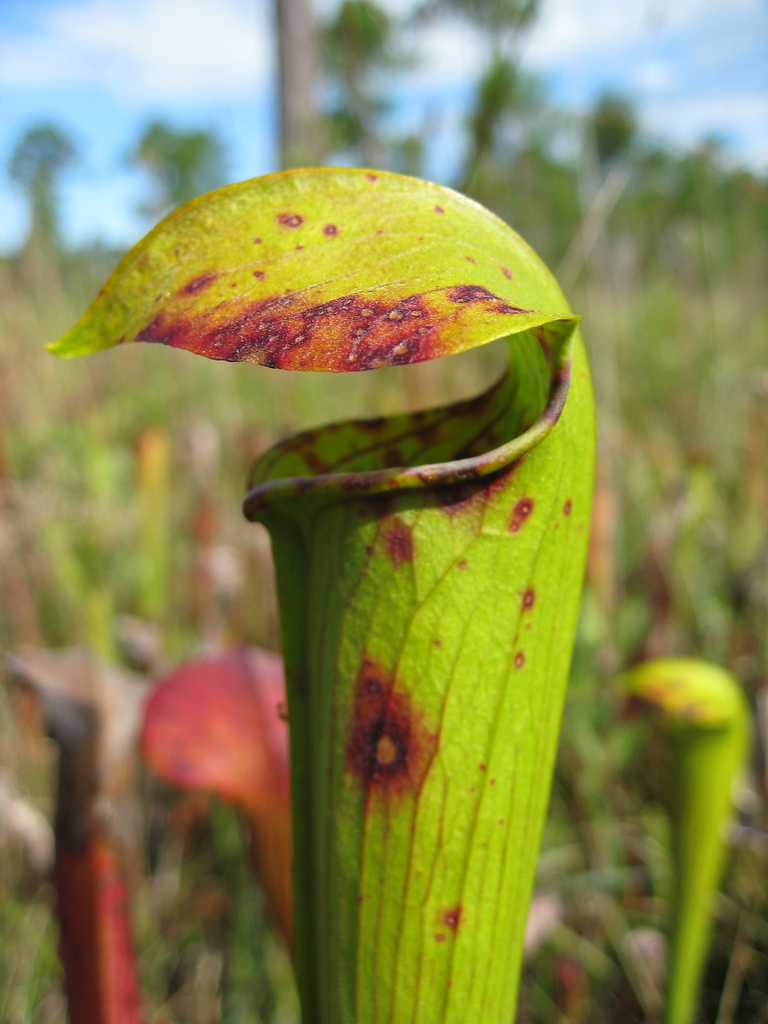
pitcher plant

Mississippi Sandhill Crane National Wildlife Refuge, MS